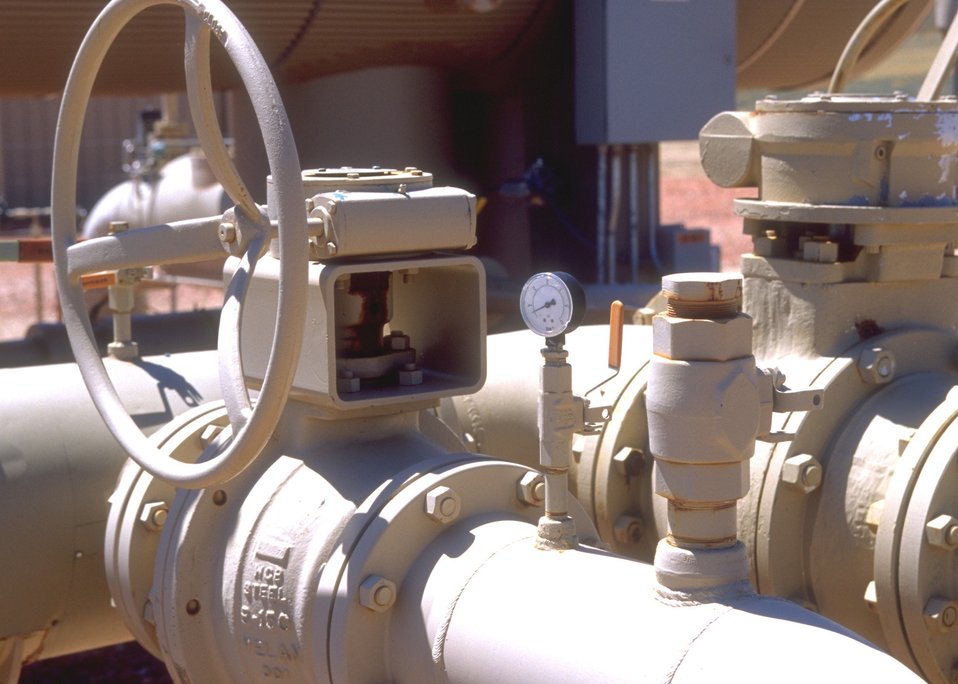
Facilities used in the production of coal bed methane, Buffalo Field Office.